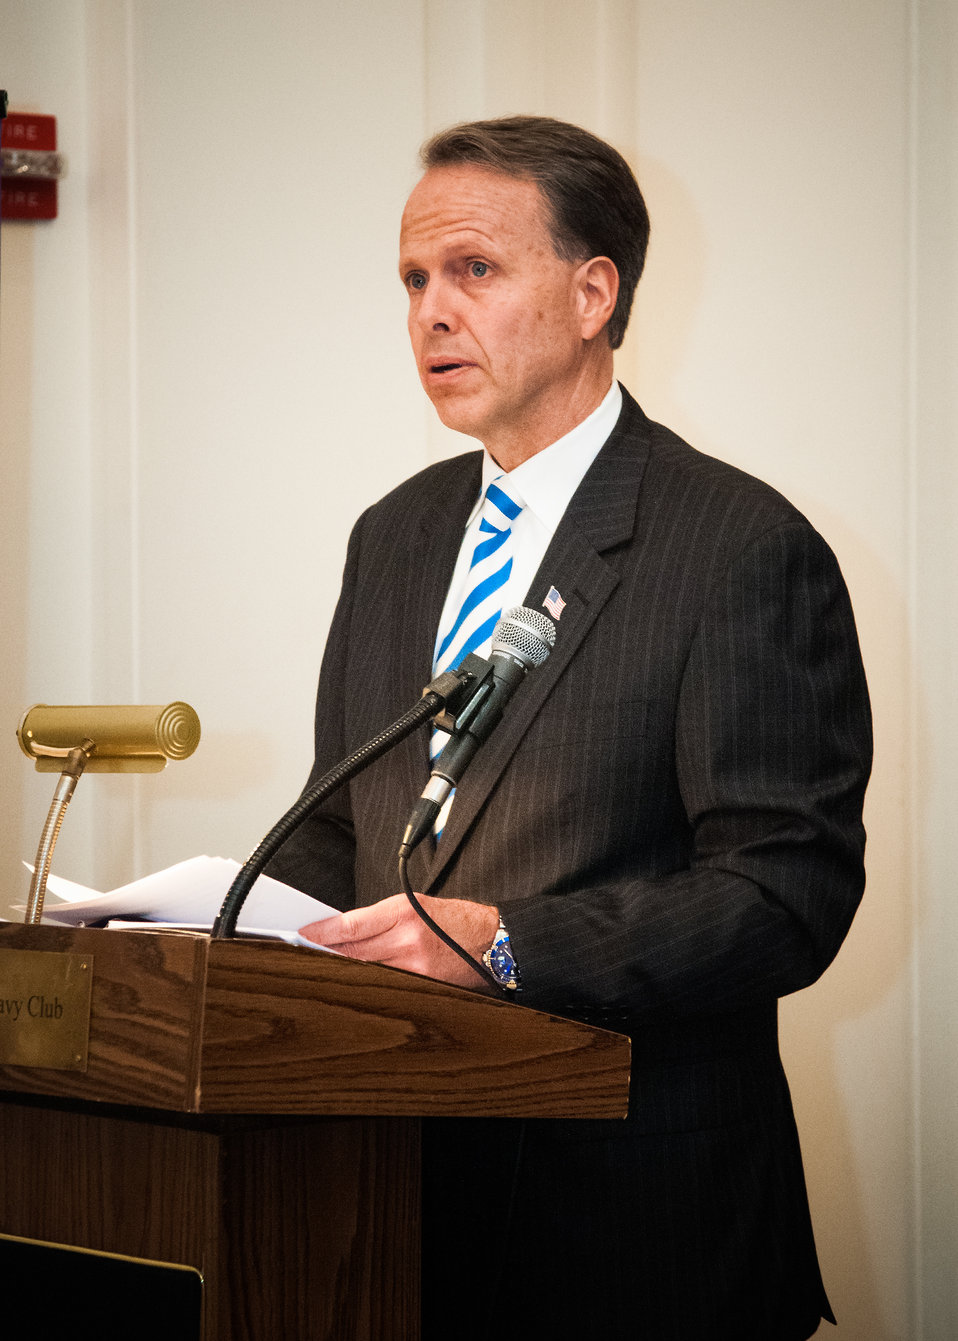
Charles Milam, Acting Deputy Assistant Secretary of Defense for Military Community and Family Policy gave remarks at the United States Department of Agriculture (USDA) and Department of Defense (DOD) jointly launch event for the 'How to Help Military and Veteran Families' - a series of publications produced jointly by the USDA, National Institute of Food and Agriculture (NIFA) and DOD at the Army-Navy Club in Washington, DC, Monday, April 15, 2013.